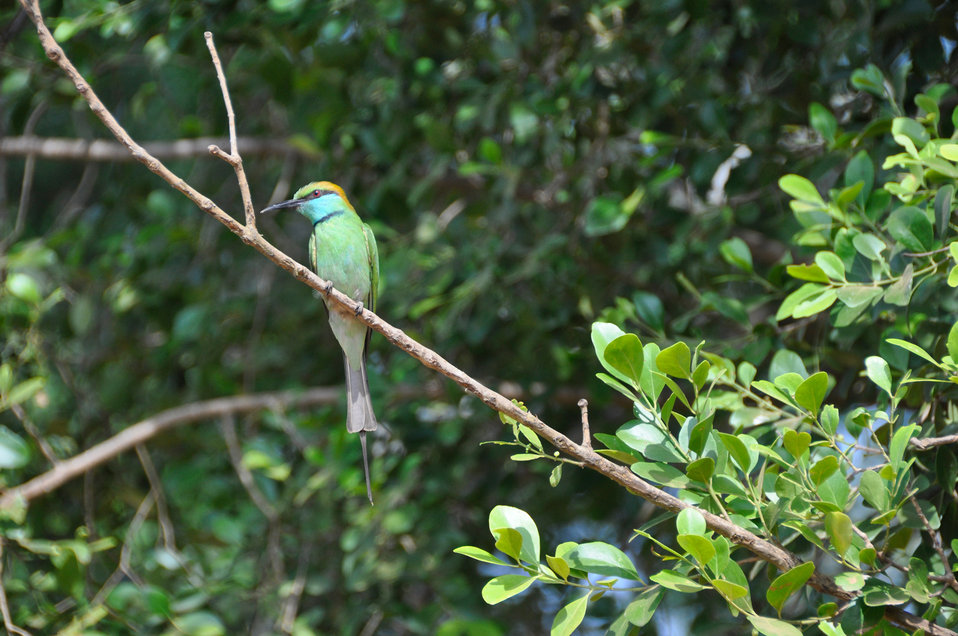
Bird

Colorful bird on a tree branch.